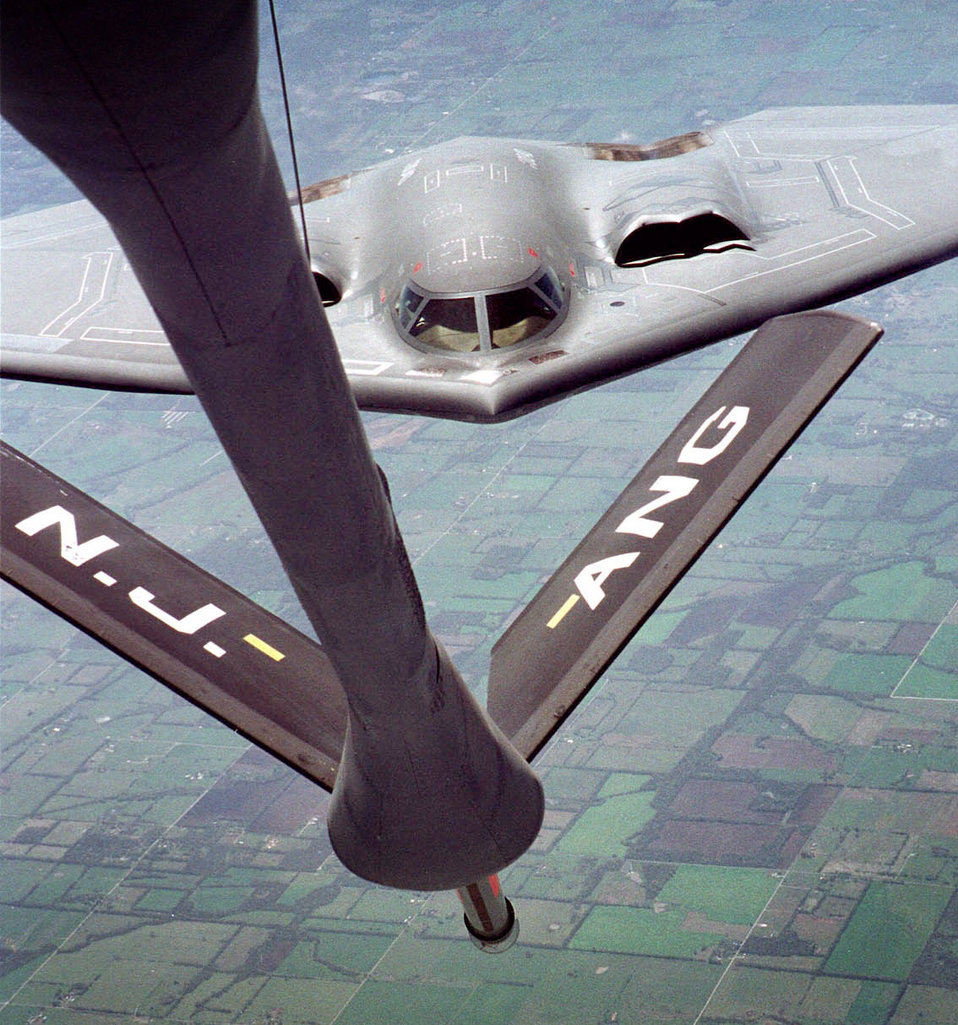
Fill-up

FILE PHOTO -- A B-2 Spirit from Whiteman Air Force Base, Mo. pulls up for a fill-up with a KC-135 Stratotanker of New Jersey's 108th Air Refueling Wing, Air National Guard over Kansas farmland. The KC-135 Stratotanker's principal mission is air refueling. This asset greatly enhances the U. S. Air Force's capability to accomplish its mission of Global Engagement.